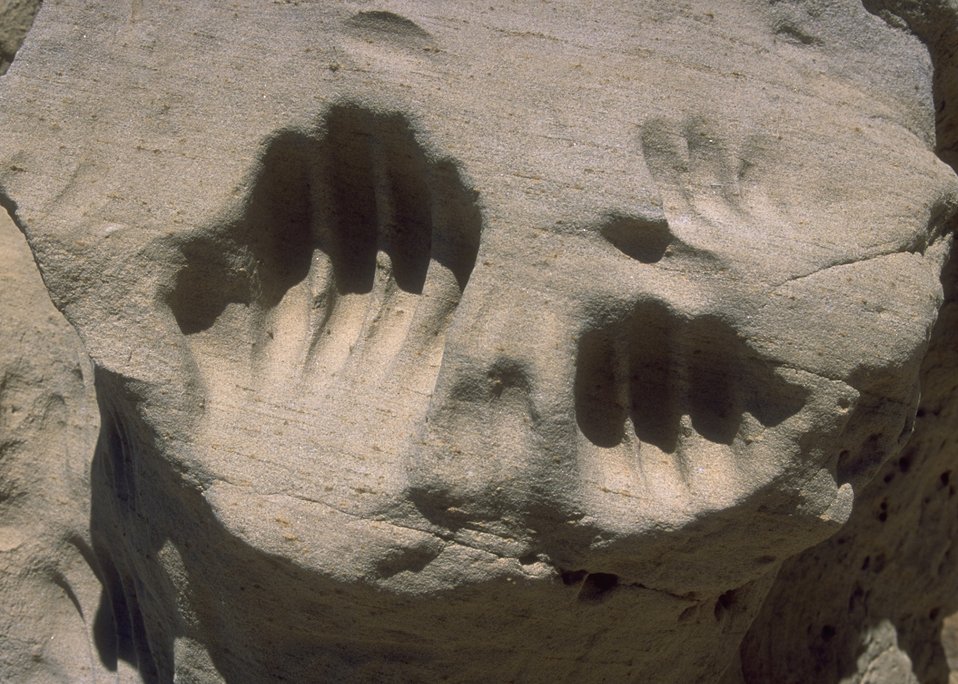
White Mountain Petroglyphs, Rock Springs Field Office.